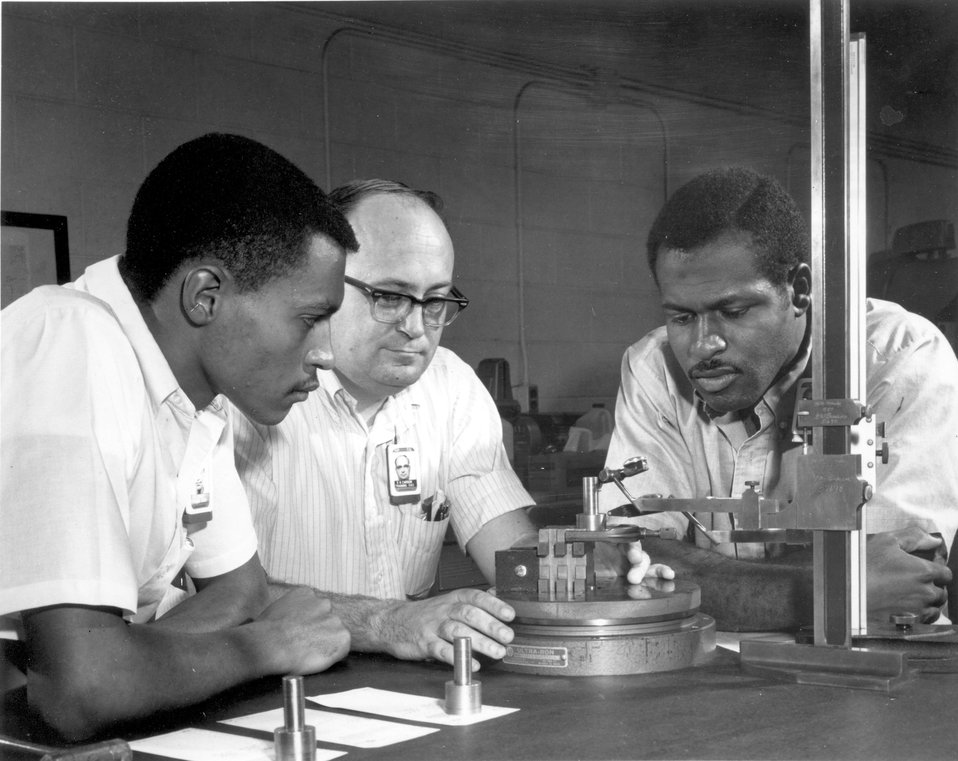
Training and technology project students check the quality of a machined item in the school's dimensional inspection laboratory. c. 1970